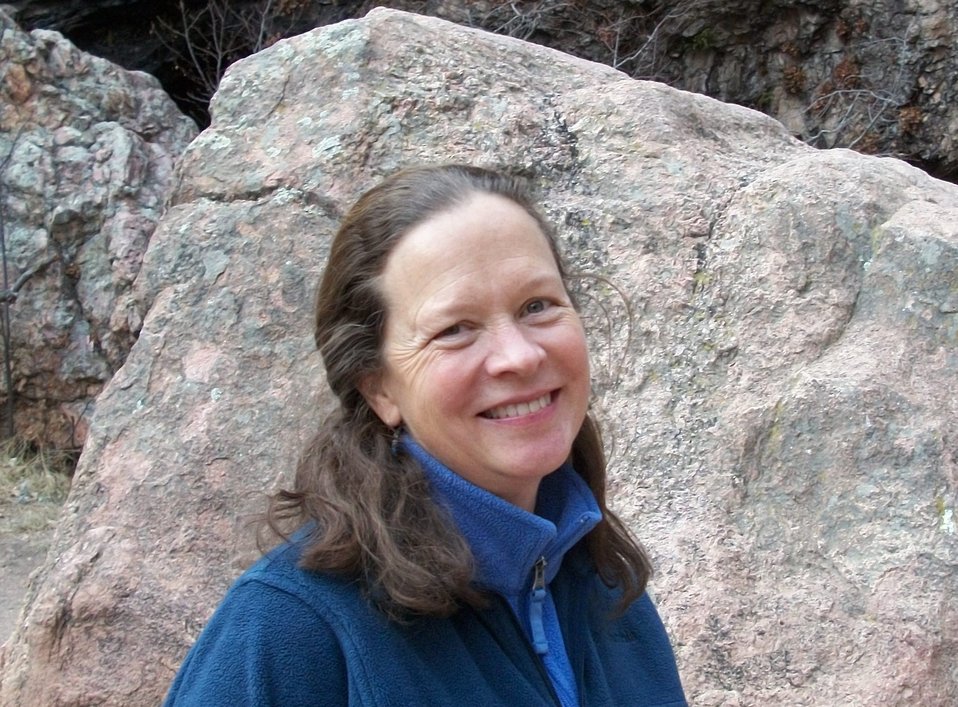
Partner-in-Mission Recovery Champion Susan Spackman-Panjabi

Susan Spackman-Panjabi of the Colorado Natural Heritage Program received a 2011 Partners-in-MissionRecovery Champion award for conserving endangered and threatened Colorado plants as a member of the Colorado Rare Plants Conservation Initiative (RPCI) .

There are 15 threatened and endangered rare plant species in Colorado; the RPCI team plays a role in recovering all of these species. The RPCI worked to minimize threats to the species such as urban and rural development, oil and gas development, and recreational use among others. The team renewed an emphasis on rare plants, coordinated conservation efforts, maximized and leveraged funding for conservation and research efforts, enhanced and increased volunteer efforts for rare plant conservation, and increased awareness and education for these rare plants.

For more RPCI information please visit: conserveonline.org/workspaces/corareplantinitiative.

For information about the 2011 recovery champions, please visit the U.S. Fish and Wildlife Service’s Recovery Champion website at www.fws.gov/endangered/what-we-do/recovery-champions/inde....